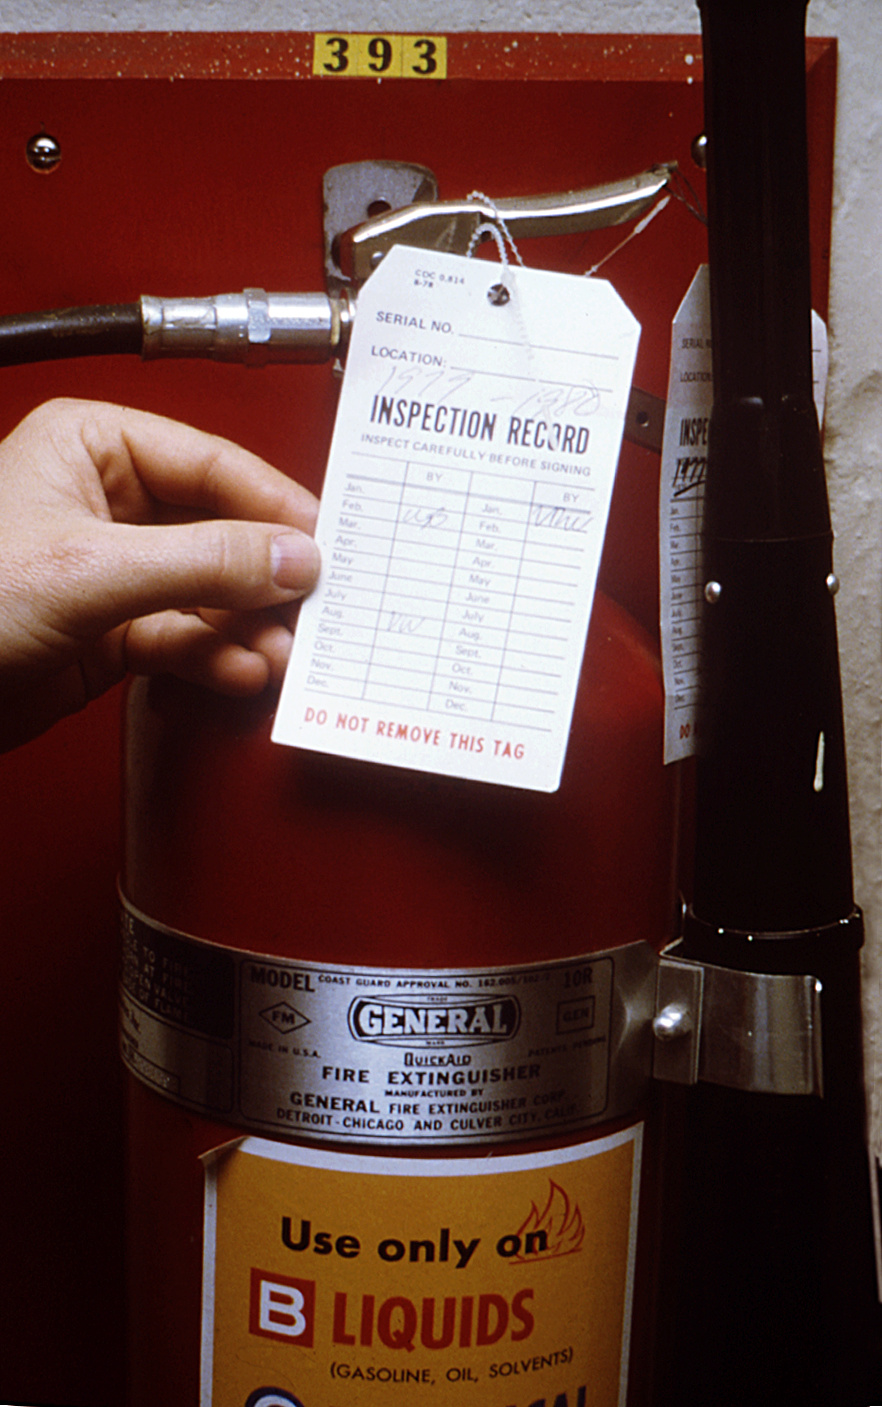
This photograph was taken during a safety equipment inspection, which included this fire extinguisher.